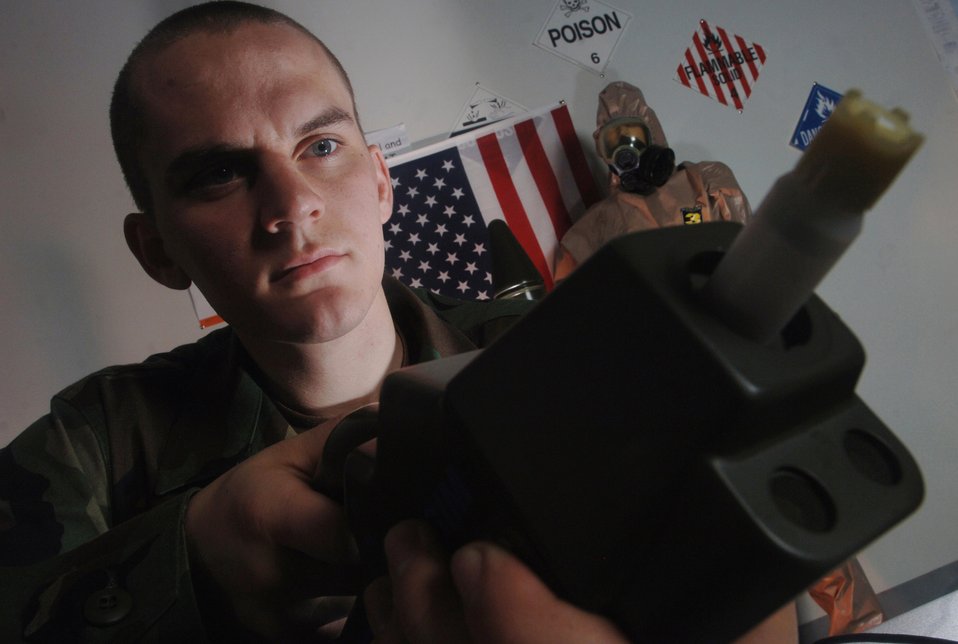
Mask inspection

Airman 1st Class Jonathan Marion inspects a chemical agent monitor, or CAM, which is a hand-held device for monitoring chemical agent contamination on personnel and equipment. Airman Marion is a readiness technician with the 374th Civil Engineer Squadron at Yokota Air Base, Japan.